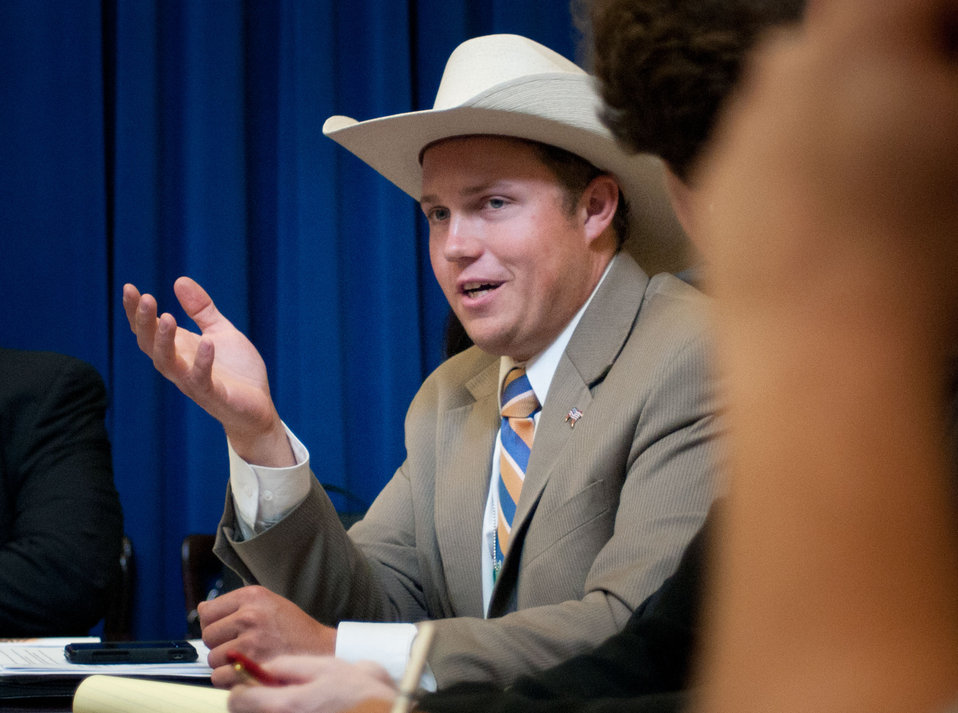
Jason Frerichs, Farmer/Rancher/Educator, U.S. Cattlemen’s Association, Wilmot, SD, attended a meeting at the White House, in Washington, DC, on July 6, 2011. He was asked to participate along with President Barack Obama, Agriculture Secretary Tom Vilsack, the President's Domestic Policy Adviser Melody Barnes and rural communities leaders from across the country for the White House Rural Champions of Change event to strengthen rural communities and promote economic growth. Jason is a fourth generation farmer/rancher, educator, and lawmaker from Wilmot, SD. Jason manages a 150 head beef cow/calf operation as well as raises corn, soybeans, wheat, and alfalfa. Frerichs is an agriculture instructor at Lake Area Technical Institute in Watertown, SD where he is also the Watertown Area FFA Advisor. Representative Frerichs has been a key player in the development of renewable energy and education issues in the State Legislature. Frerichs is actively involved in the Farmers Union, the South Dakota Education Association, SD Stockgrowers, and the United States Cattlemen’s Association.